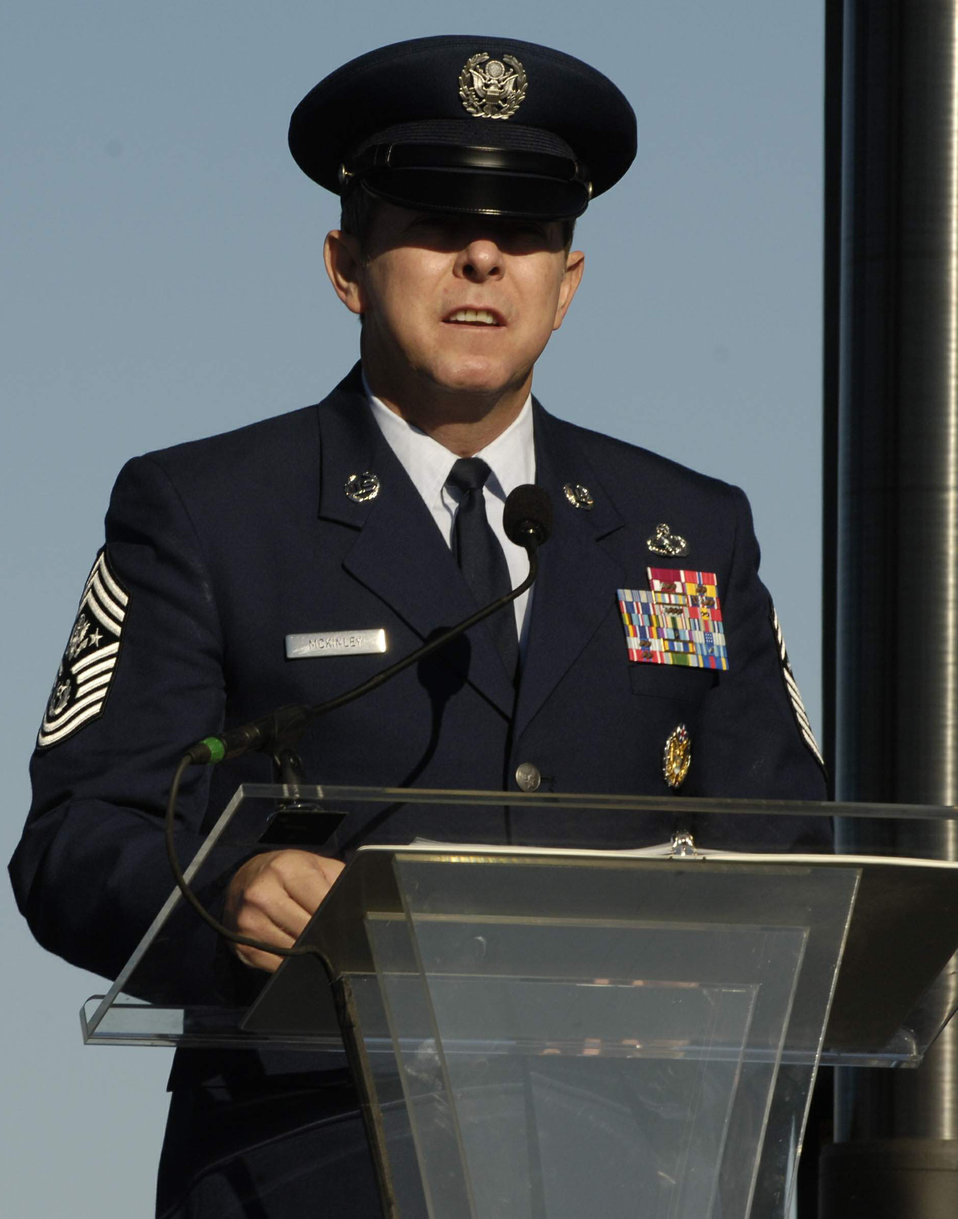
Induction ceremony at Air Force Memorial

Chief Master Sergeant of the Air Force Rodney J. McKinley welcomes 90 young men and women into the U.S. Air Force on Saturday, Oct. 14, 2006, during open house activities at the Pentagon prior to the official dedication ceremony of the Air Force Memorial. President George W. Bush will join Senior Defense Dept. and Air Force officials in a ceremony to present the memorial to the Nation. Desiged by the late James Ingo Freed the memorial with its three soaring spires inspired by the U.S. Air Force Thunderbirds bomb burst manuever, pays tribute to and honors the patriotic men and women of the U.S. Air Force and its predeccessor organizations. An open house will run near the Pentagon in conjunction with the dedication ceremony which will feature performances by the U.S. Air Force Band, the U.S. Air Force Honor Guard drill team, and will culminate with a concert featuring country music performer LeeAnn Womack.